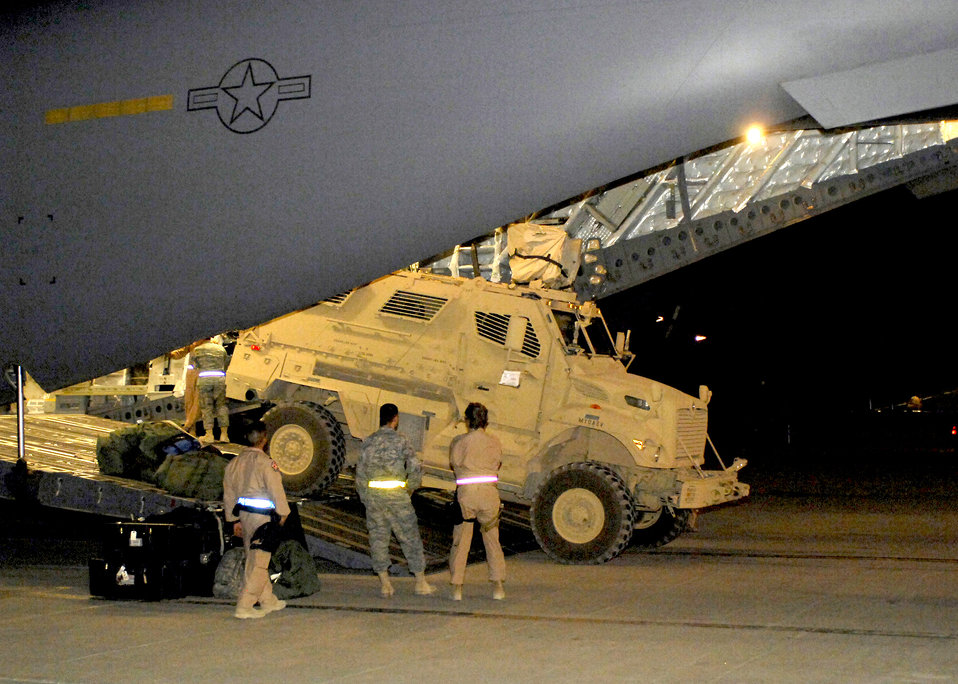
Easy does it

Airmen unload a Mine Resistant Ambush Protected Vehicle from a C-17 Globemaster III Aug.4 at Bagram Airfield, Afghanistan. The MRAP is designed to be both safe and effective for Soldiers conducting patrols, convoy security and other missions throughout Afghanistan.